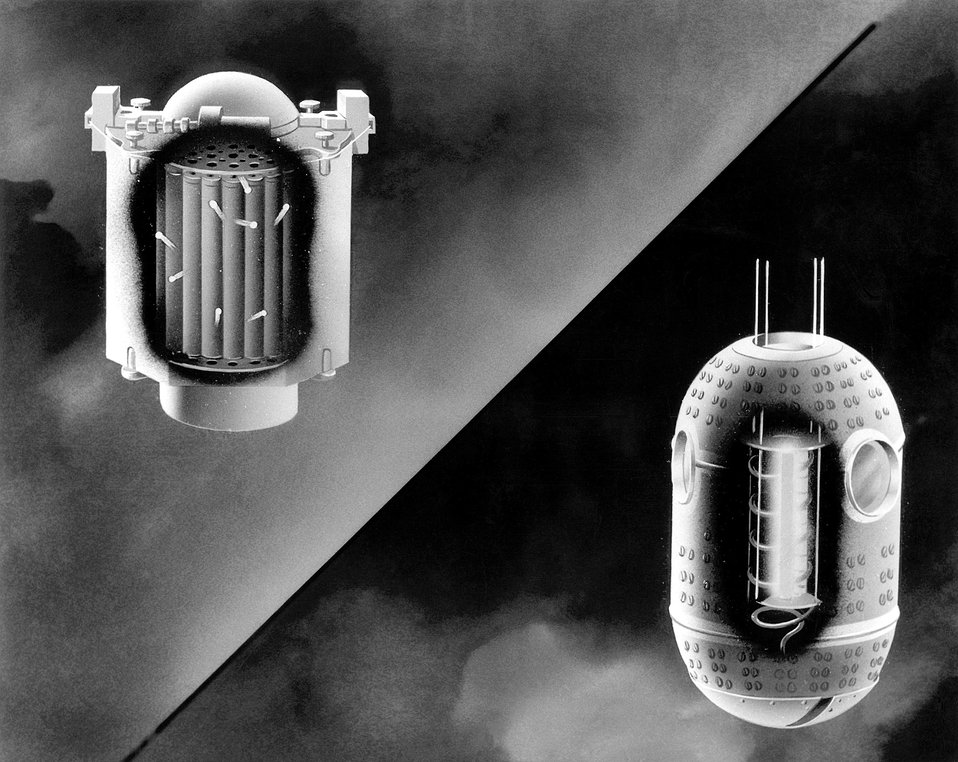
Two approaches in the SNAP systems are shown: the nuclear reactor which produces heat for the generation of electricity, and the isotopic generator, which uses the energy of decay from radioactive isotopes.